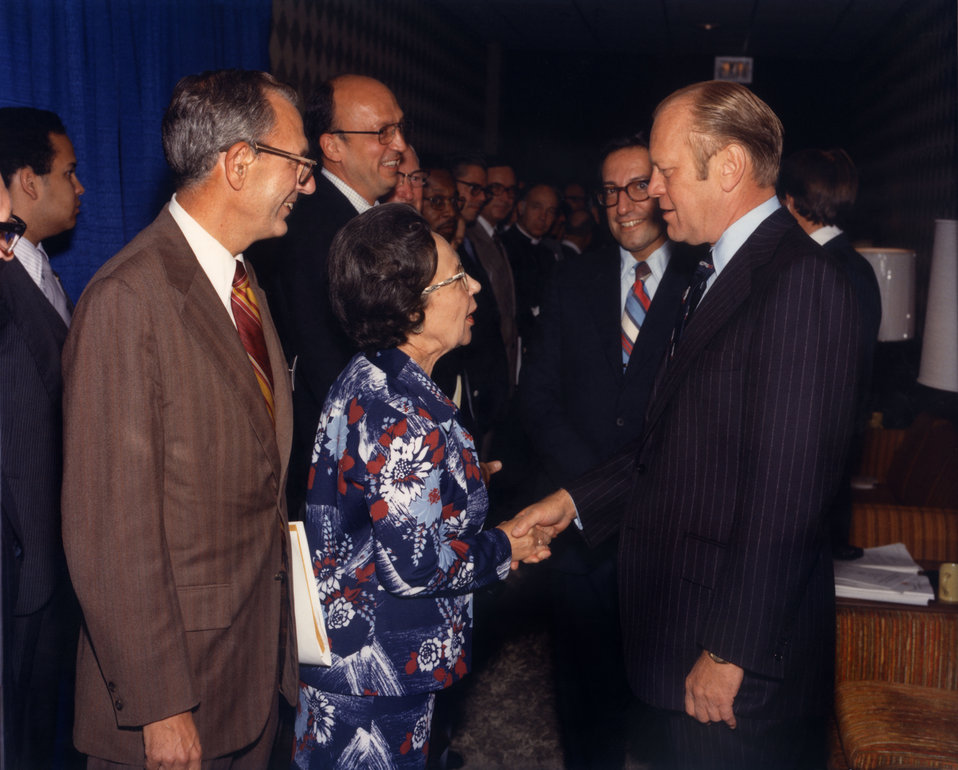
President Gerald Ford at Mid-Appalachia Governors Meeting Knoxville

75-371a DOE photo by Frank Hoffman

President Gerald Ford at Mid-Appalachia Governors Meeting Knoxville Tennessee 10-7-1975